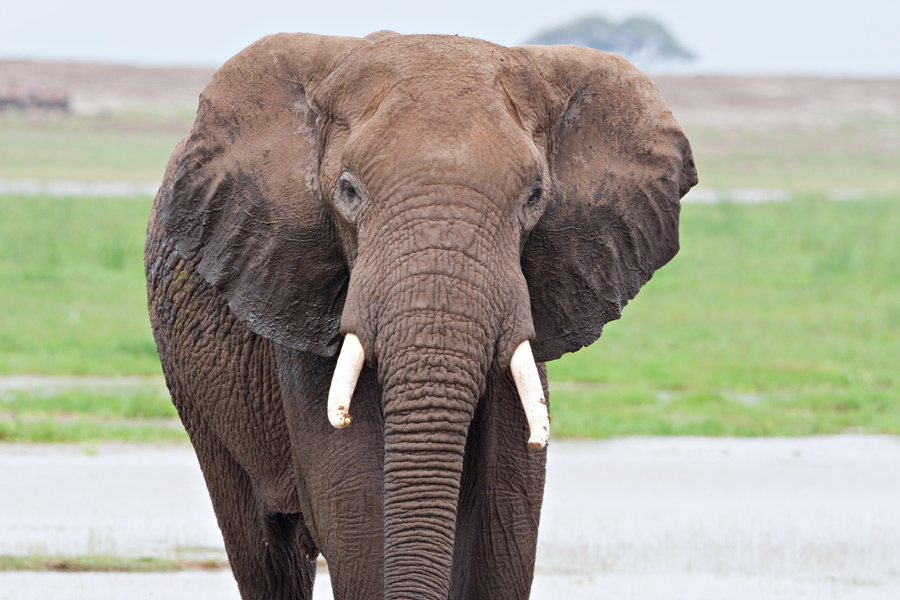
elephant bull amboseli-JoeMilmoeUSFWS

Afrian elephant bull in Amboseli National Park, Kenya.